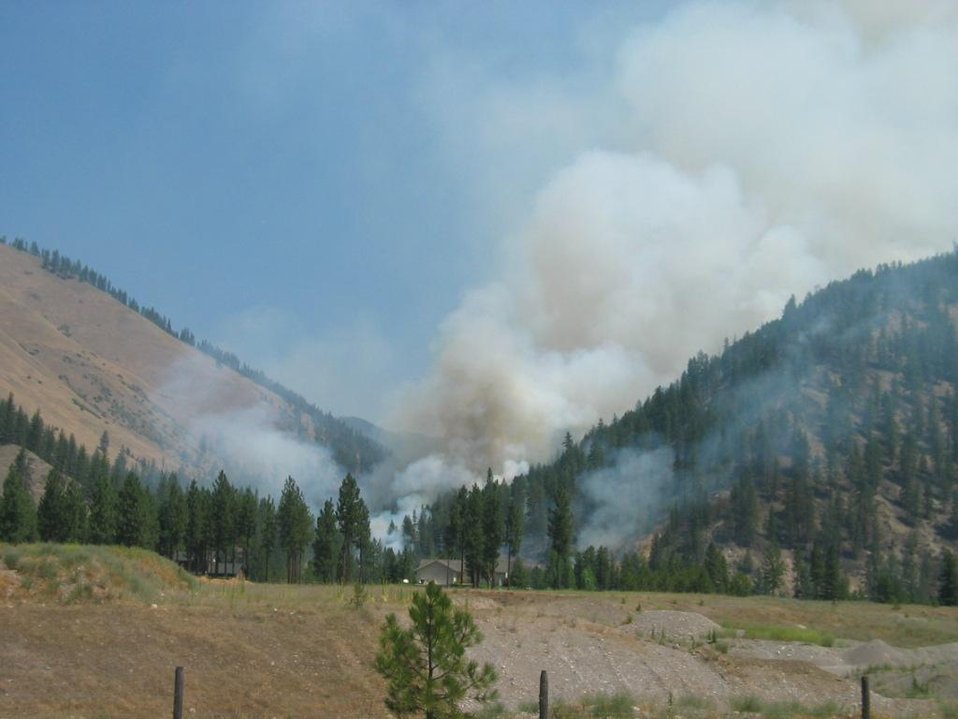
The West Mullan Fire in the Lolo National Forest in Montana near Superior, MT began on Jul. 14, 2013 was due to human interference and has consumed approximately 6, 090 acres. The West Mullan Fire is approximately 45% contained.